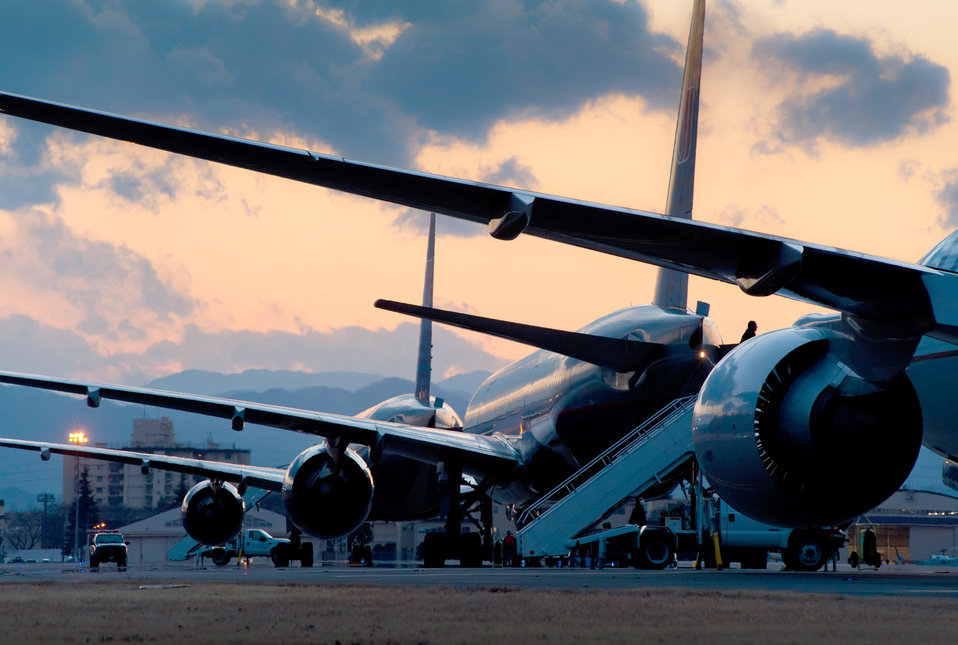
Gates pledges U.S. help for Japan

Aircraft are parked at Yokota Air Base, Japan, after diverting from Narita International Airport in Tokyo. Officials opened Yokota AB?s airfield March 11, 2011, after an earthquake struck Tokyo.